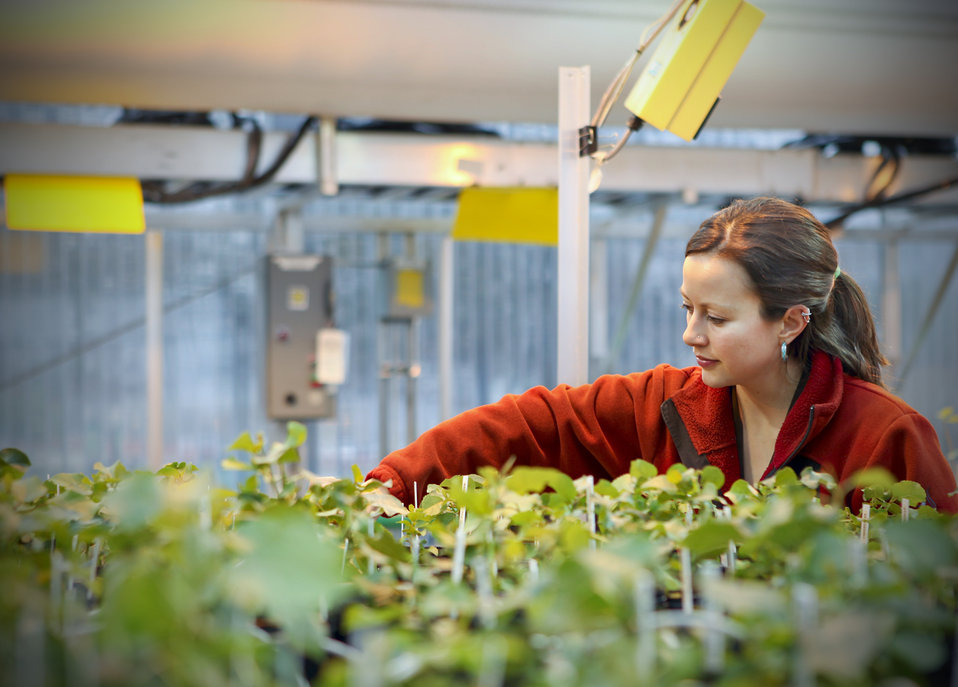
Photo of the Week: Biomass Research at Oak Ridge National Laboratory

Scientists and engineers at the Energy Department and its national laboratories are finding new, more efficient ways to convert biomass into biofuels that can take the place of conventional fuels like gasoline, diesel and jet fuel. At Oak Ridge National Laboratory's Environmental Science Division, graduate students and researchers use transplanted trees in a number of studies, including those involving biomass conversion to biofuels. In this photo, graduate student Alina Campbell is removing damaged leaves from Eastern Cottonwood trees, which helps stimulate the trees' growth.